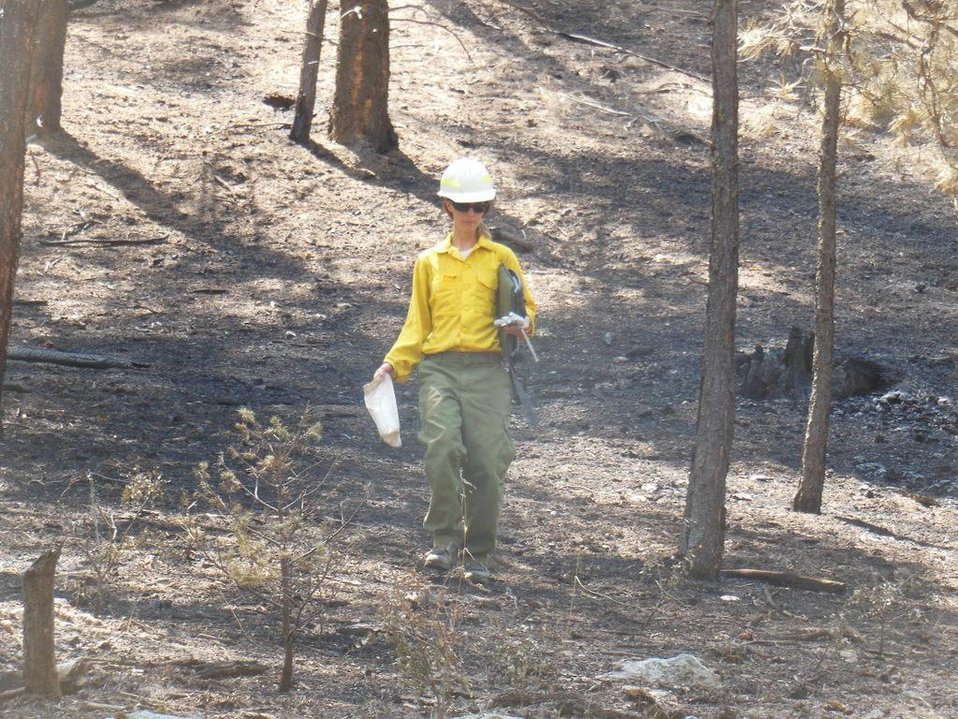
A soil scientist with the Burned Area Emergency Response (BAER) team assesses a burn scar in the Quaking Aspen Creek area of the Silver Fire. The Silver Post Fire response has the Burned Area Emergency Response (BAER) team beginning operations to seed acres of high burn severity and to mulch additional acres. Seeding reduces effects to downstream life, property, and infrastructure by reducing erosion and runoff. Areas of high burn severity are to be seeded with a quick germinating, non-persistent annual cereal barley that would provide rapid ground cover. A small percentage of native perennial species would also be included to give the burned area a jump start in natural recovery, and provide for long-term ground cover. Mulch is the most effective treatment for controlling erosion and runoff, as it provides immediate ground cover. Mulch also assists in stabilizing soil in and around these areas.